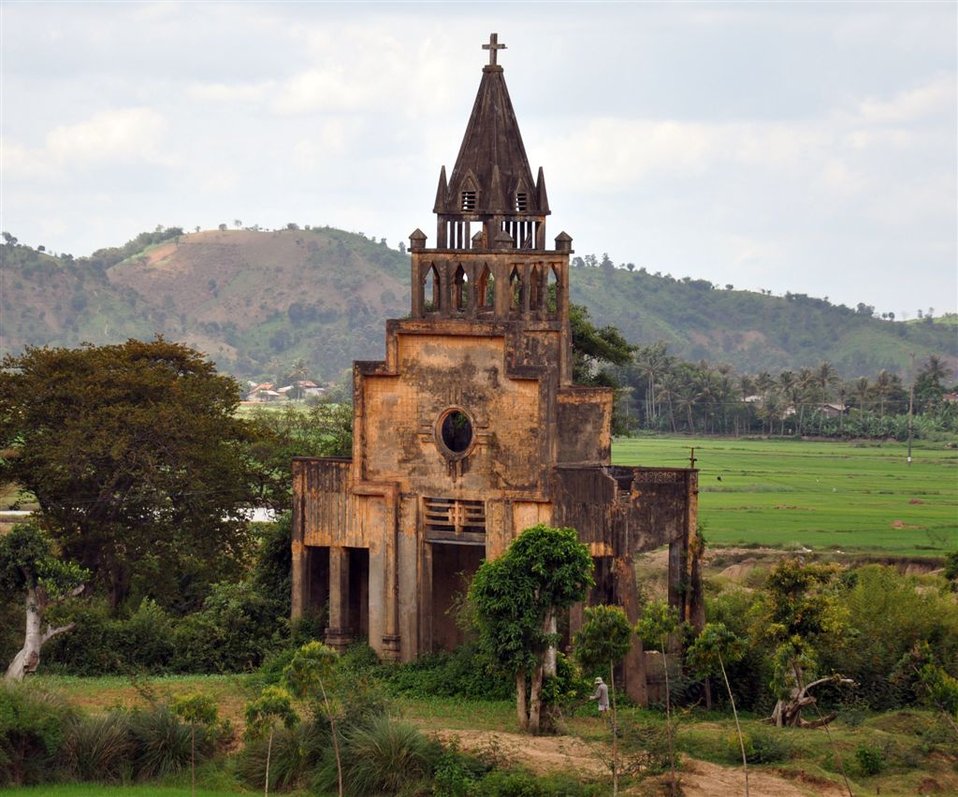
Local populations benefit from new cocoa crop techniques and market access.